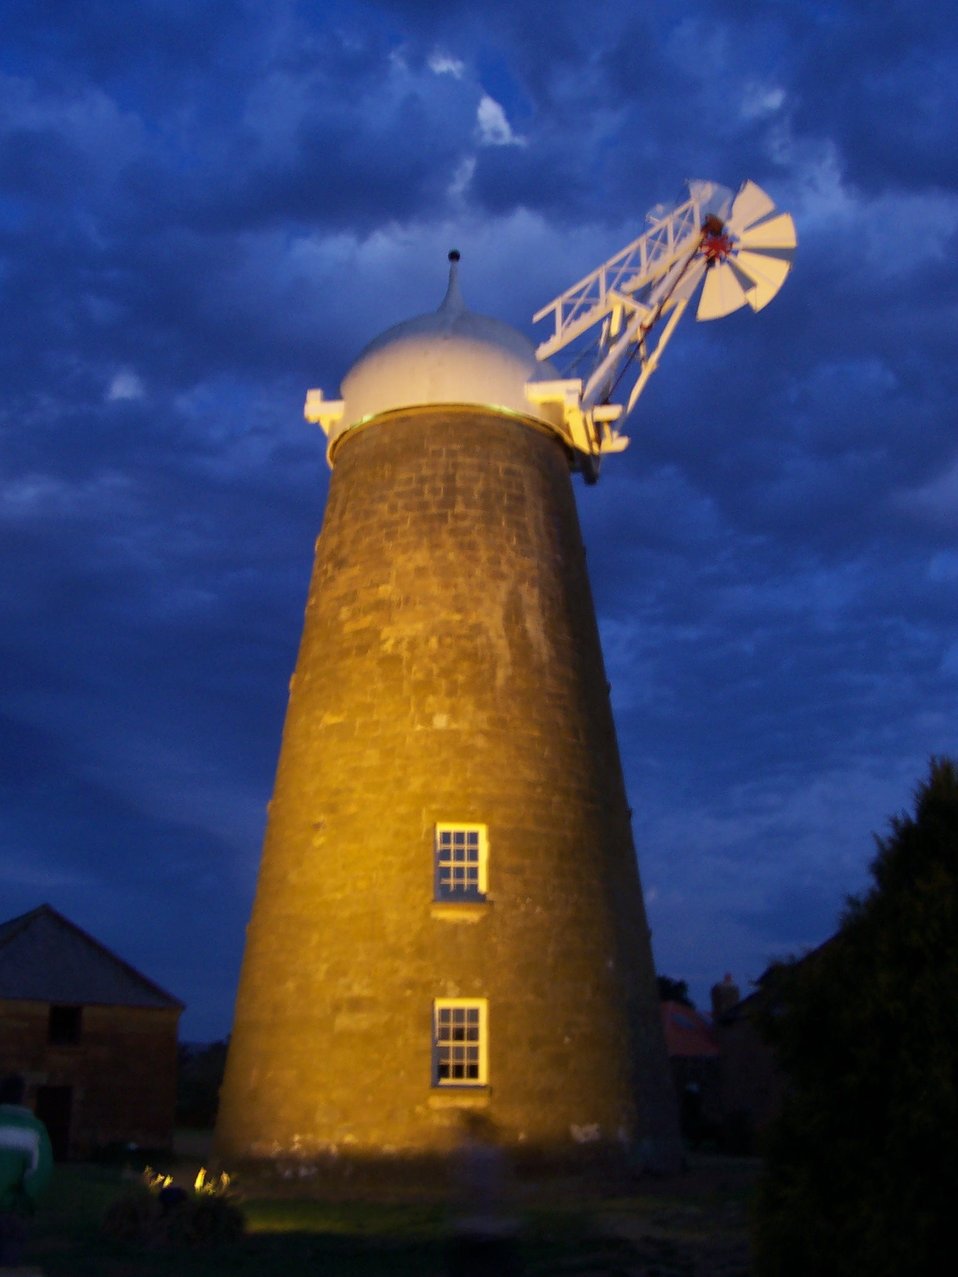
Photograph taken of Callington Mill, in Oatlands, Tasmania by author in November 2006.